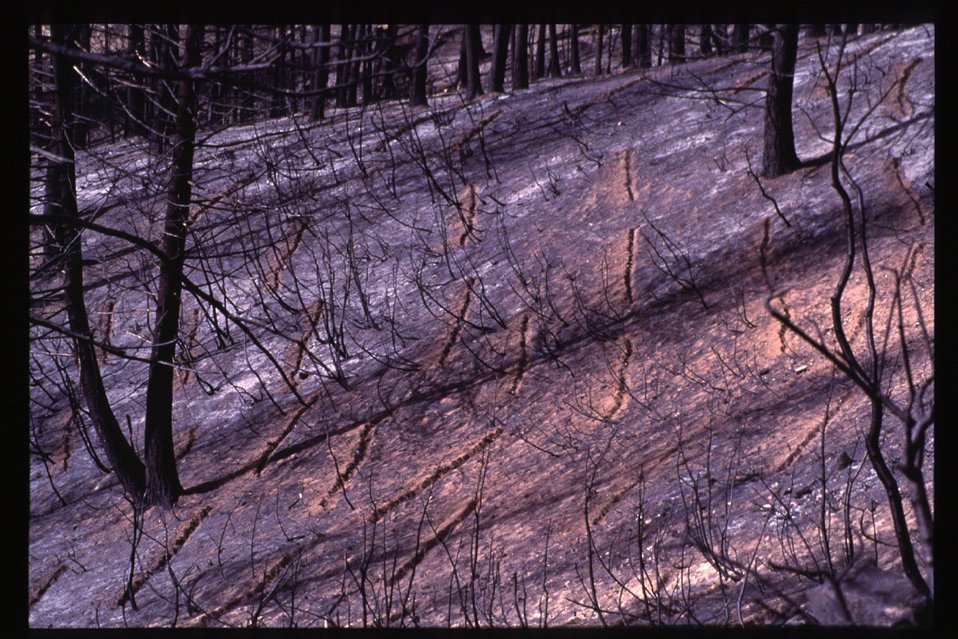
8th Street Fire Burnt trees Four Rivers Field Office LSRD Lower Snake River District